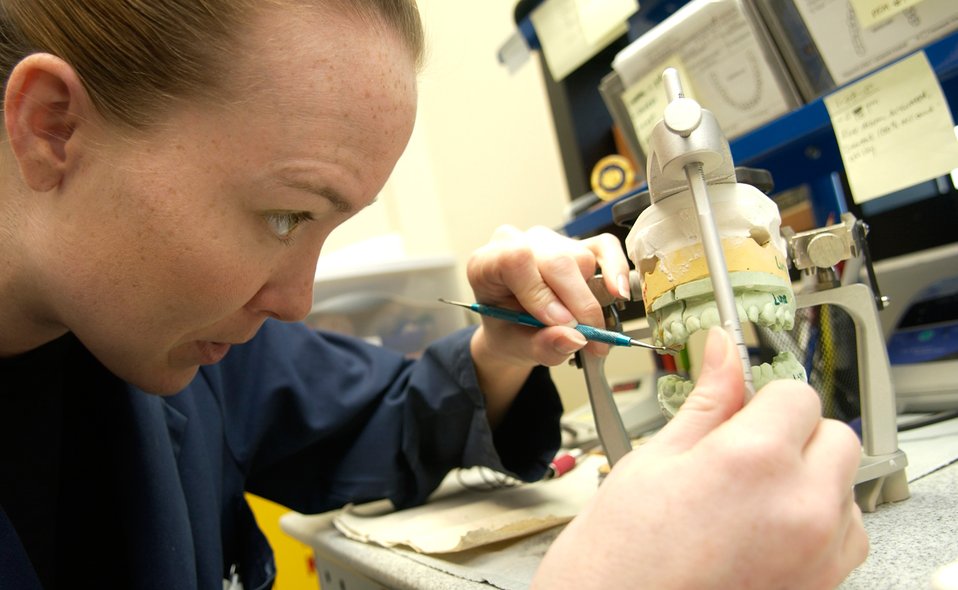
Andersen small dental clinic of the year

Staff Sgt. Tracy Roberts works on a patient's molding Feb. 6. She is a 36th Medical Group dental laboratory technician. The 36th MDOS dental clinic received the Air Force Small Dental Clinic of the Year Award for 2006.